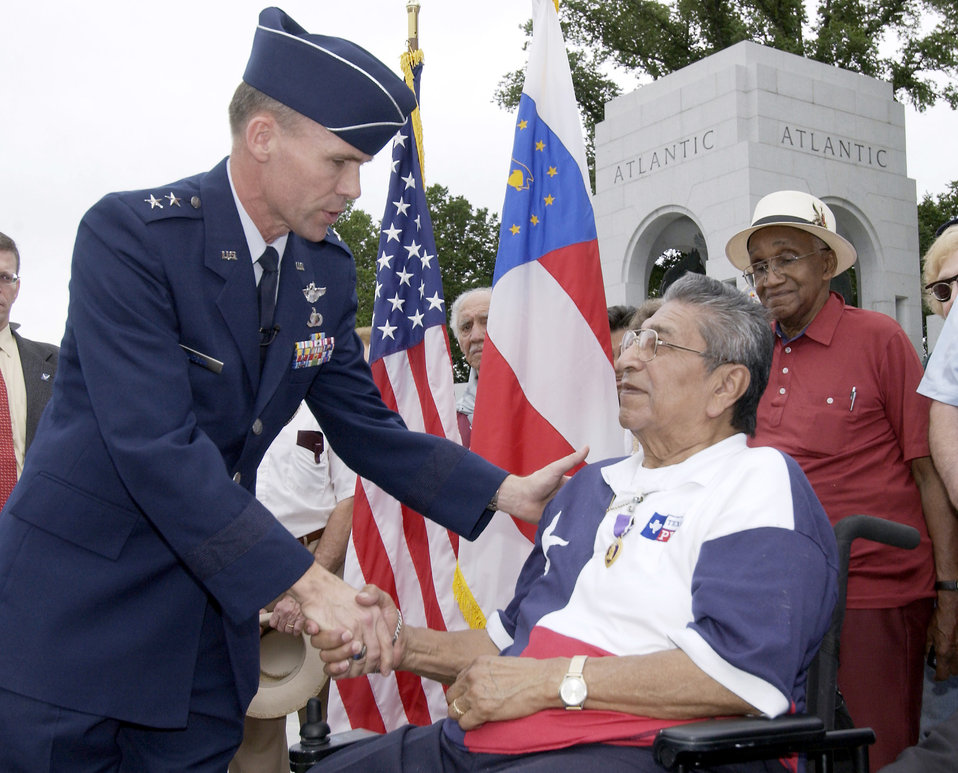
Purple Heart presentation

WASHINGTON -- Maj. Gen. John L. Hudson presents John Martinez with a Purple Heart during a ceremony at the World War II Memorial here May 28. The presentation happened more than 59 years after the veteran's A-20 attack bomber crashed near Rhiems, France, causing a paralyzing spinal-cord injury. Mr. Martinez was a staff sergeant serving as an aerial gunner on the A-20. He was visiting here for the memorial's dedication. General Hudson is the Joint Strike Fighter program director at the Pentagon.